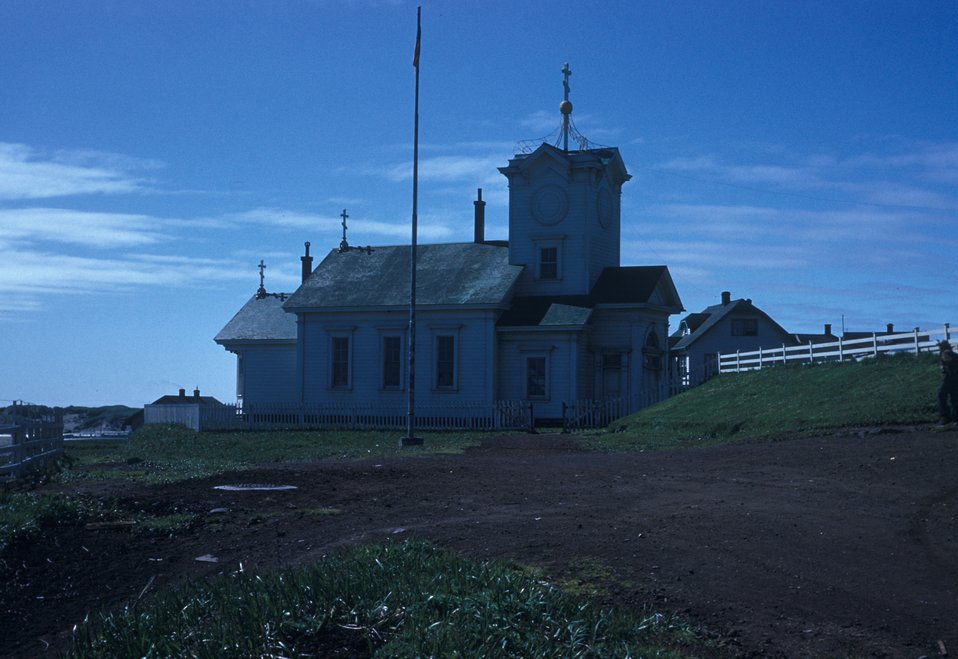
The Russian Orthodox Church at St. Paul without the dome.